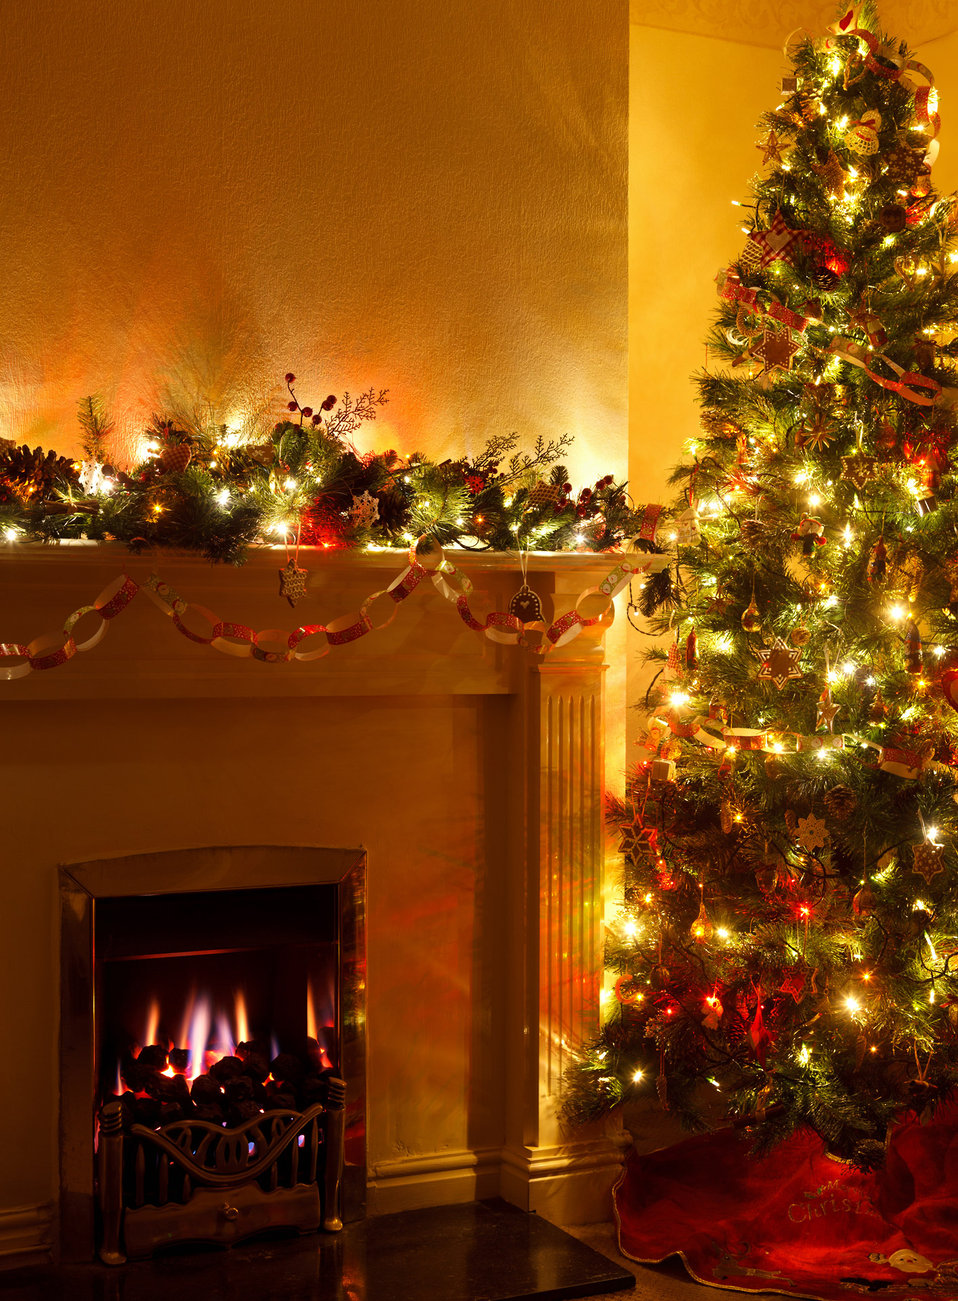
Christmas tree and fireplace

Lit christmas tree with a fireplace at night.